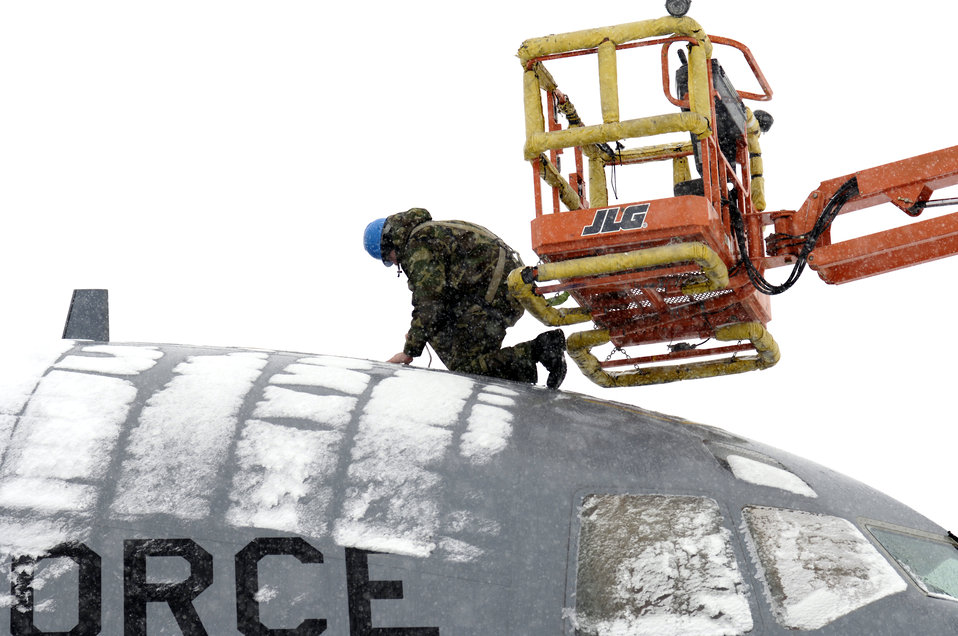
De-ice is nice

Airman Russell Baker, a fuel systems journeyman, works on the air-refueling receptacle of a C-17 Globemaster III March 7 during a snowstorm that hit McGuire Air Force Base, N.J. Airman Baker is assigned the 305th Maintenance Squadron.